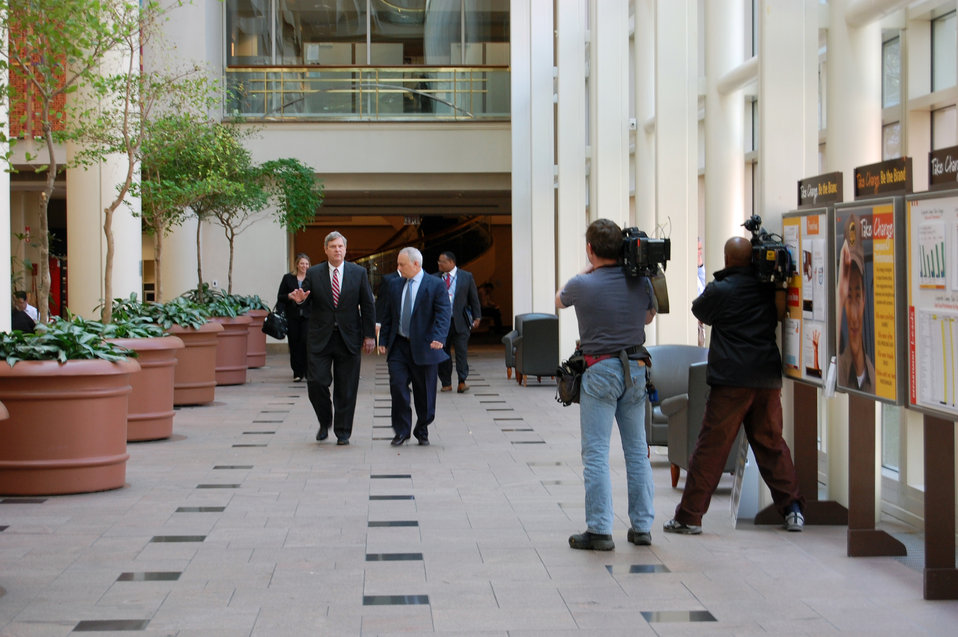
Agriculture Secretary Tom Vilsack (l) tours the United Parcel Service (UPS) World Headquarters in Atlanta, GA on Thursday, Mar. 21, 2013.